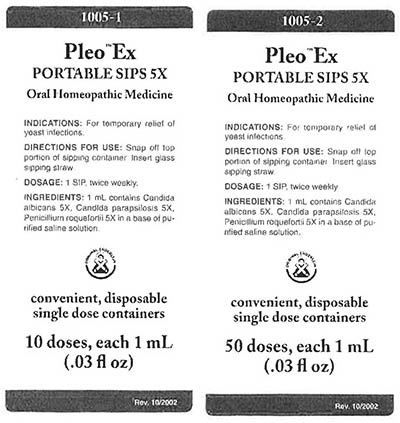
RECALLED – Homeopathic Drug Products

March 18, 2014 – Product Recall – Terra-Medica Issues Voluntary Nationwide Recall of Specified Lots of Pleo Homeopathic Drug Products Due to the Potential for Undeclared Penicillin.